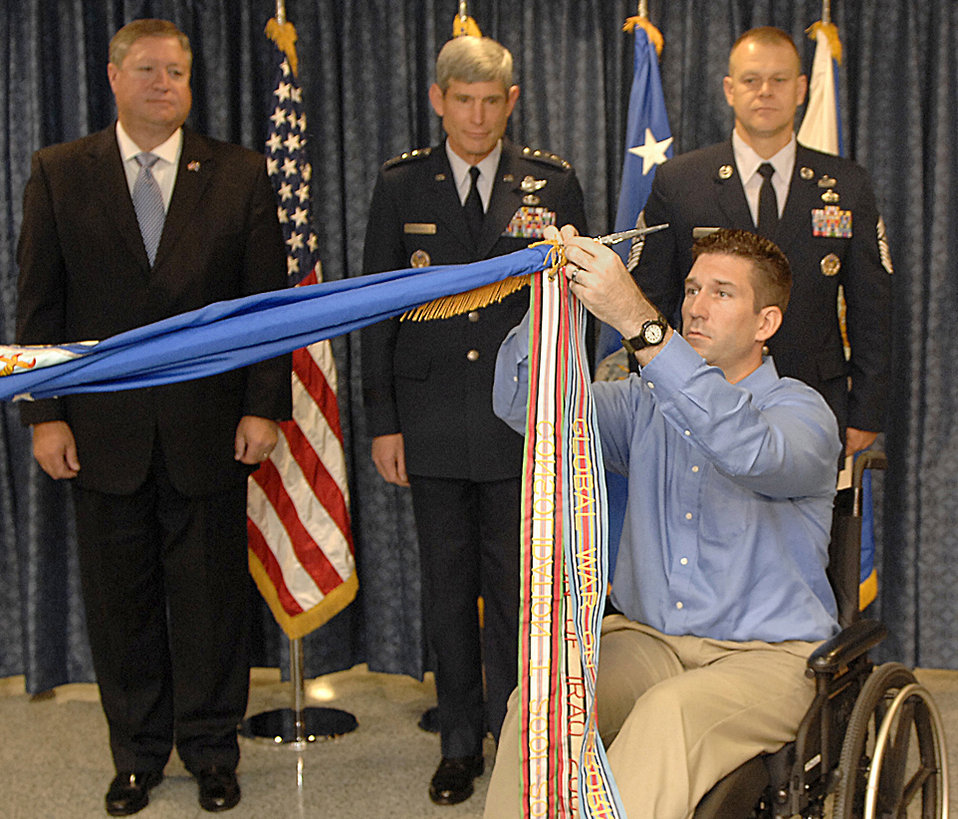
Dedicating Airman's Hall

As Secretary of the Air Force Michael Donley, Air Force Chief of Staff Gen. Norton Schwartz and Chief Master Sgt. of the Air Force James Roy observe, Tech. Sgt. Michael G. Williams hangs a campaign ribbon on the Air Force flag during the Airman's Hall dedication ceremony Sept. 17, 2009, in the Pentagon.